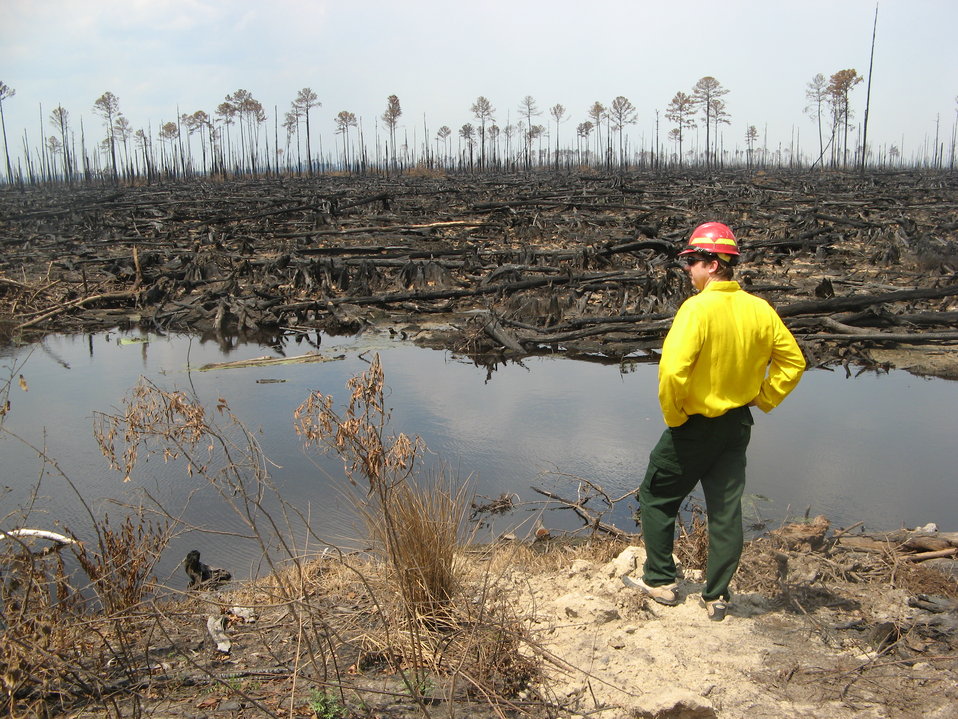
Surveying the fire

Suffolk, VA, August 2011: North Carolina Department of Environment and Natural Resources Secretary David McKnight views the Lateral West Fire from Corapeake Ditch. About 200 acres of Park land burned in the 6,300-fire, with the rest on Great Dismal Swamp National Wildlife Refuge.